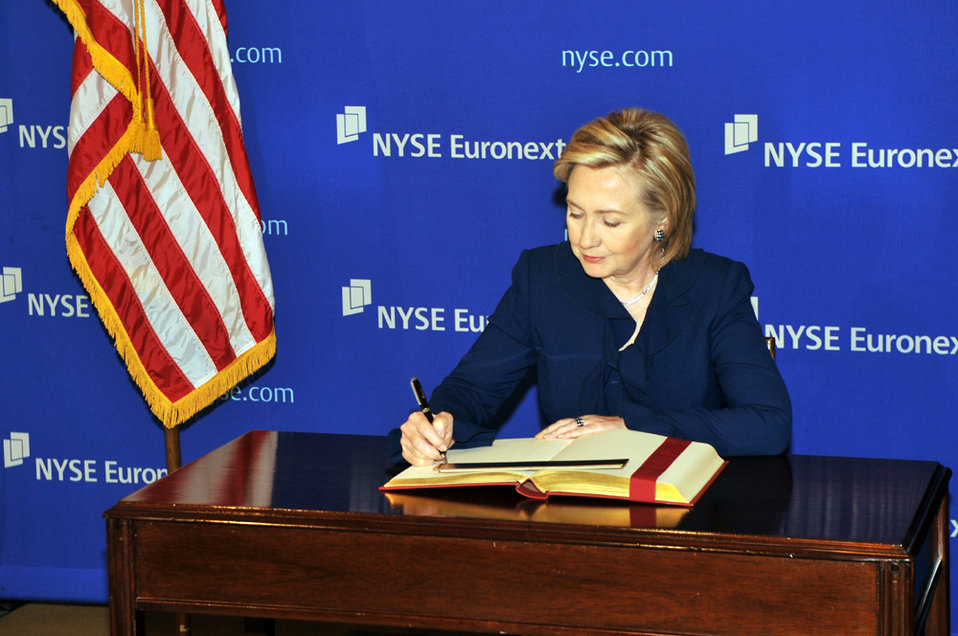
UNGA 2009: Secretary Clinton Meets With New York Stock Exchange CEO

U.S. Secretary of State Hillary Rodham Clinton signs a document while meeting with New York Stock Exchange (NYSE) Chief Executive Officer Duncan Niederauer at the NYSE during the 64th Session of the UN General Assembly in New York City, New York September 21, 2009.